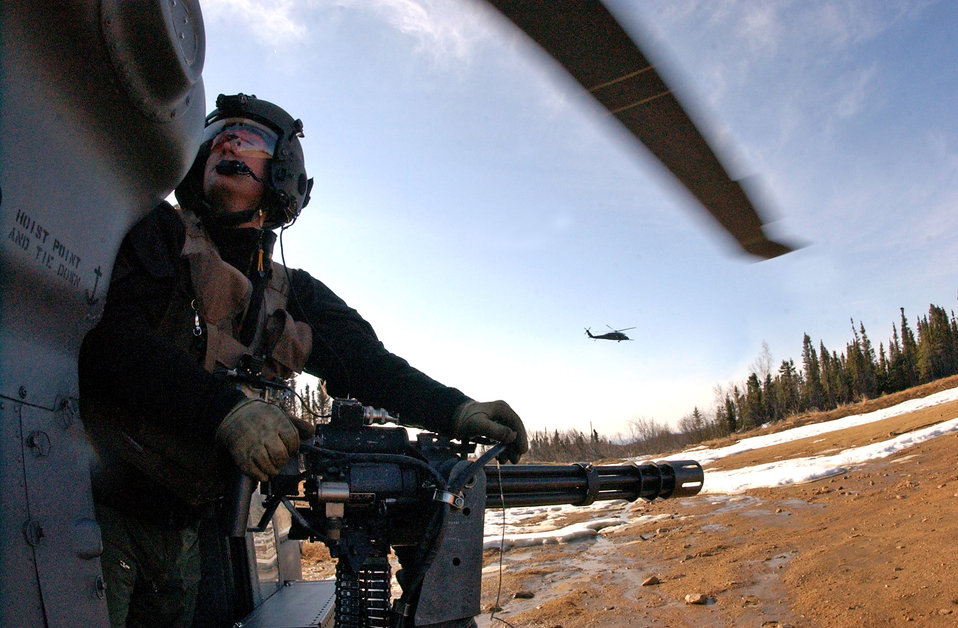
Alaska range, airspace critical to combat training

Staff Sgt. Dave Torrance scans the area for enemy threats aboard an HH-60G Pave Hawk helicopter April 17 while manning a 7.62mm minigun at Eielson Air Force Base, Alaska. Red Flag-Alaska exercises help enhance combat training for U.S. military and coalition forces. Sergeant Torrance is a 210th Rescue Squadron Det. 1 flight engineer.